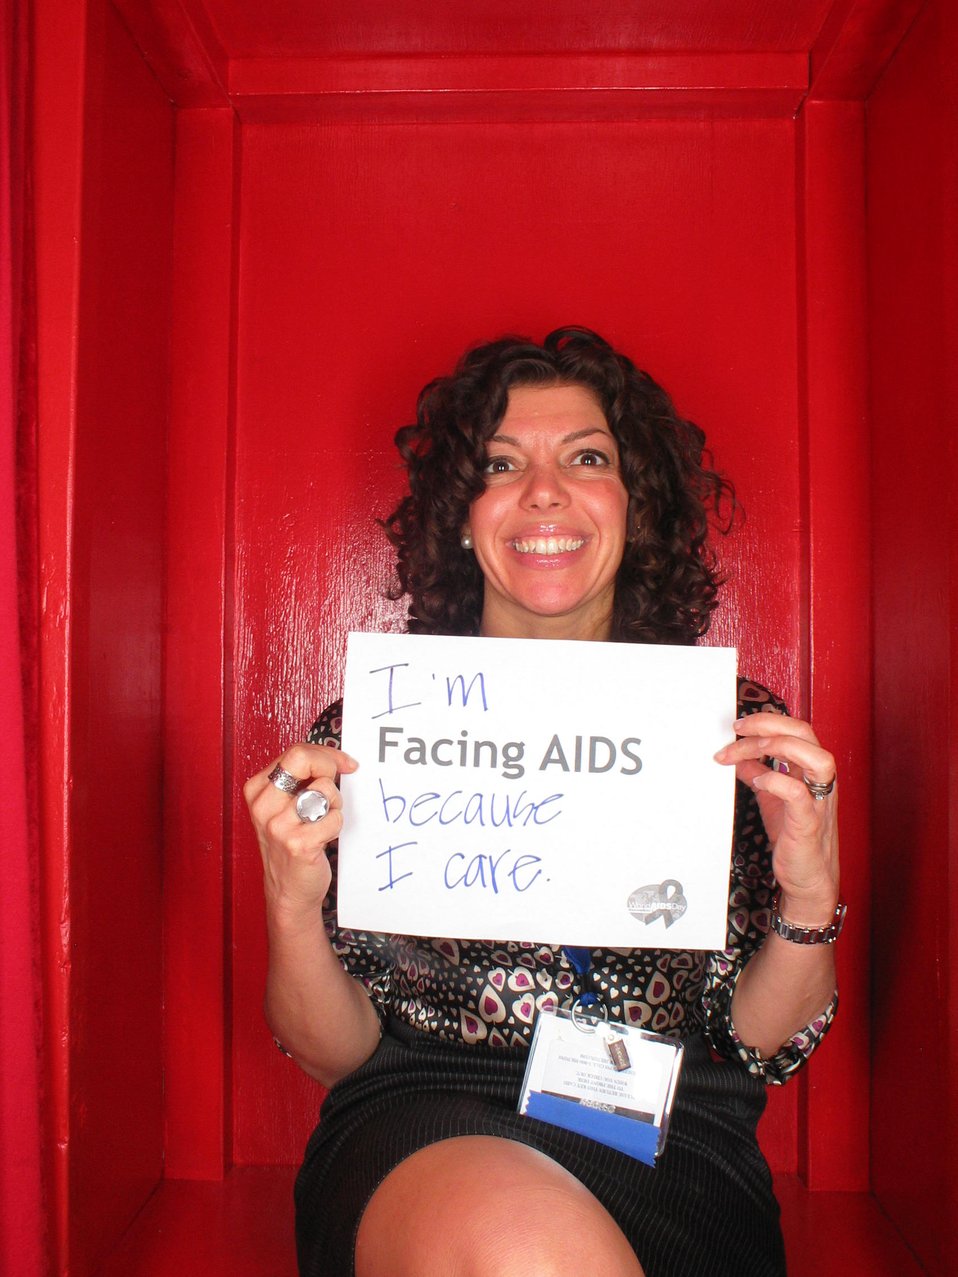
I'm Facing AIDS because I care.